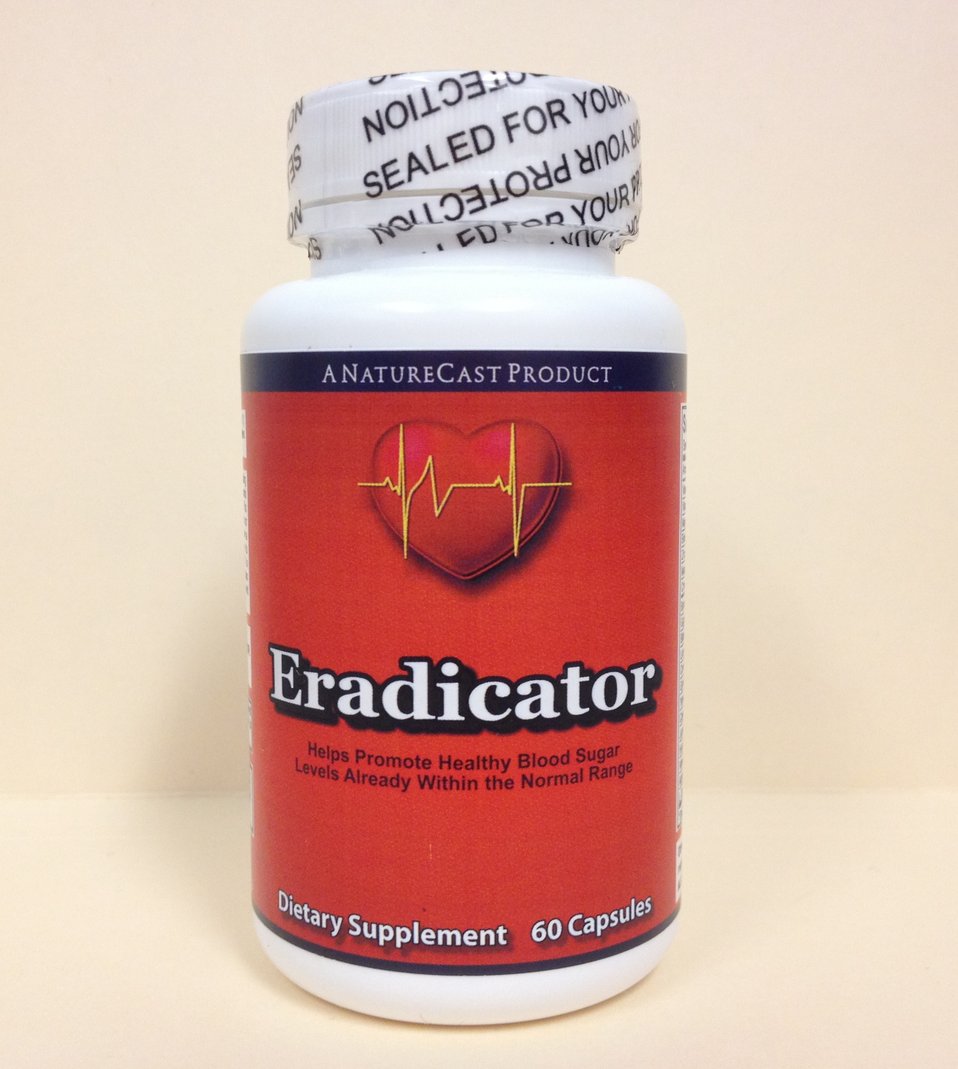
Illegally Sold Diabetes Treatments - Eradicator

This product is promoted with unapproved claims to prevent or treat diabetes and/or its complications. FDA warns consumers to avoid unproven and potentially unsafe products sold as treatments for diabetes.